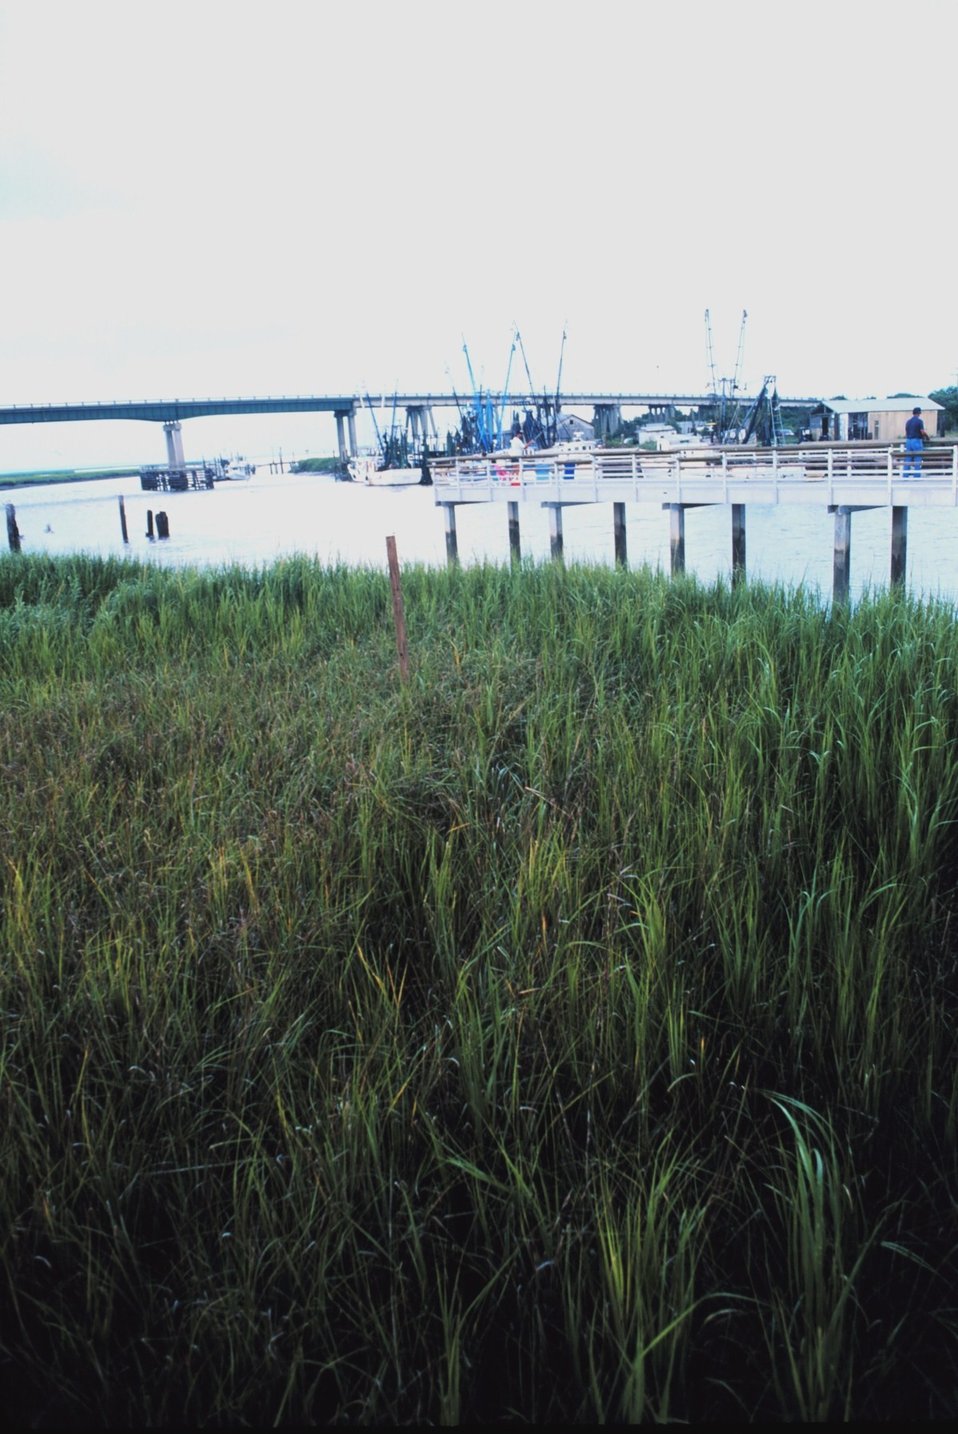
The Lazaretto Creek Bridge from Lazaretto Creek Park